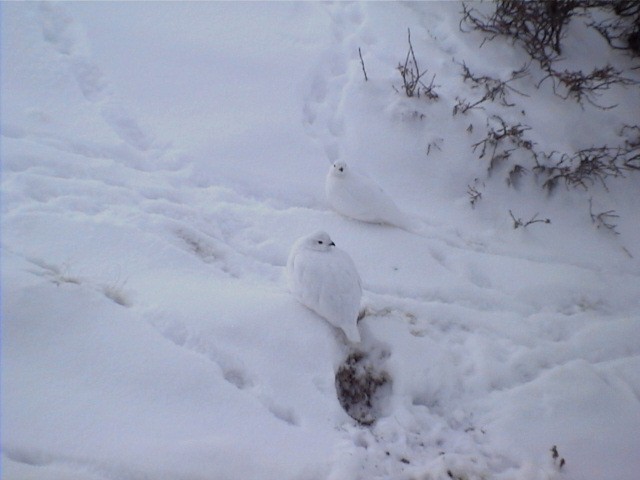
Two White-tailed Ptarmigan

Male and female white-tailed ptarmigan share similar body size, shape, and winter plumage, with adult body lengths up to 13.4 inches (34 centimeters) and body masses up to 0.9 pound (425 grams). Both the southern and Mt. Rainier white-tailed ptarmigan are white in winter and brown in summer, the feathers changing color with the seasons to camouflage the birds. Although the body feathers change color, the white-tailed ptarmigan is named for its perpetually white tail feathers, a morphological trait that distinguishes it from other ptarmigan species. During the winter, males and females are stark white and difficult to distinguish from the background of snow. In the summer during the breeding season, males turn a lighter color of brown or gray than females and develop a dark band of feathers on the breast that resembles a necklace.

During the winter, the southern and Mt. Rainier white-tailed ptarmigan feed on exposed willows above the snow and dig roosts, or burrows, into the soft snow as protection from wind and weather. During the summer, the white-tailed ptarmigan feeds on willows and other alpine vegetation. White-tailed ptarmigan require cool temperatures, rocky areas, soft snow, and the presence of willows. The southern and Mt. Rainier white-tailed ptarmigan spend their entire lifecycles in alpine habitats and are well adapted to survive in the cold, arid, and open alpine environments. Adaptations of the white-tailed ptarmigan to these alpine environments include its cryptic plumage, low metabolic rates, and heavily feathered feet that act as snowshoes.